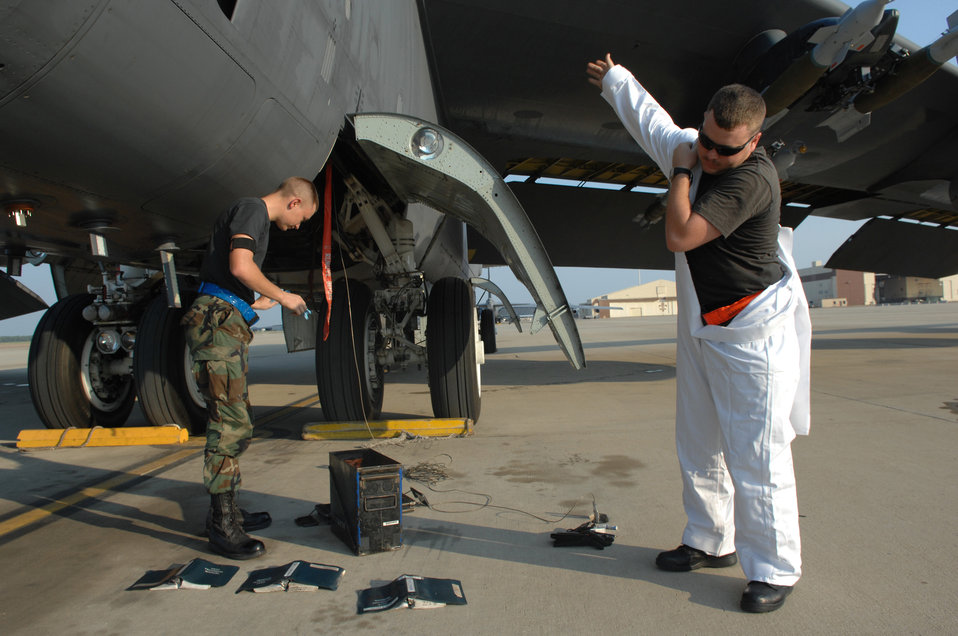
Barksdale Airmen recreate history

Airman 1st Class Jason Edwards and Senior Airman William Braswell put on protective gear prior to conducting a through flight inspection on a 2d Bomb Wing B-52H Stratofortress. Both are 2nd Aircraft Maintenance Squadron crew chiefs. The aircraft had just returned from flying a maritime intercept training mission, Aug 24.